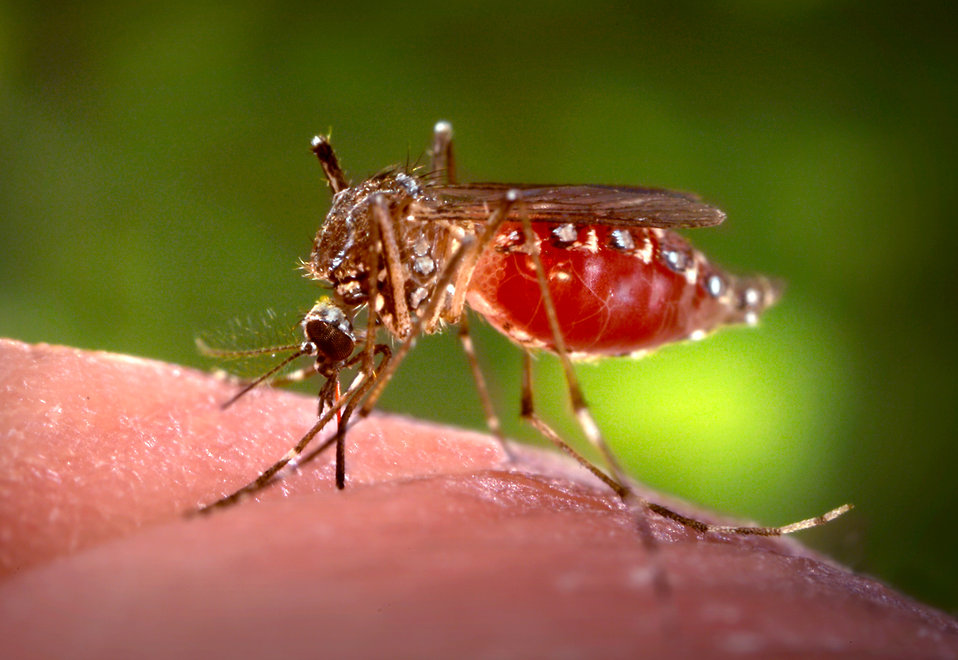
This 2006 image depicted a female Aedes aegypti mosquito as she was obtaining a blood-meal from a human host through her fascicle, which had penetrated the host skin, was reddening in color, reflecting the blood's coloration through this tubular structure. In this case, what would normally be an unsuspecting host was actually the CDC's biomedical photographer's own hand, which he'd offered to the hungry mosquito so that she'd alight, and be photographed while feeding. As it filled with blood, the abdomen became distended, stretching the exterior exoskeletal surface, thereby, causing it to become transparent, allowing the collecting blood to become visible as an enlarging intra-abdominal red mass.